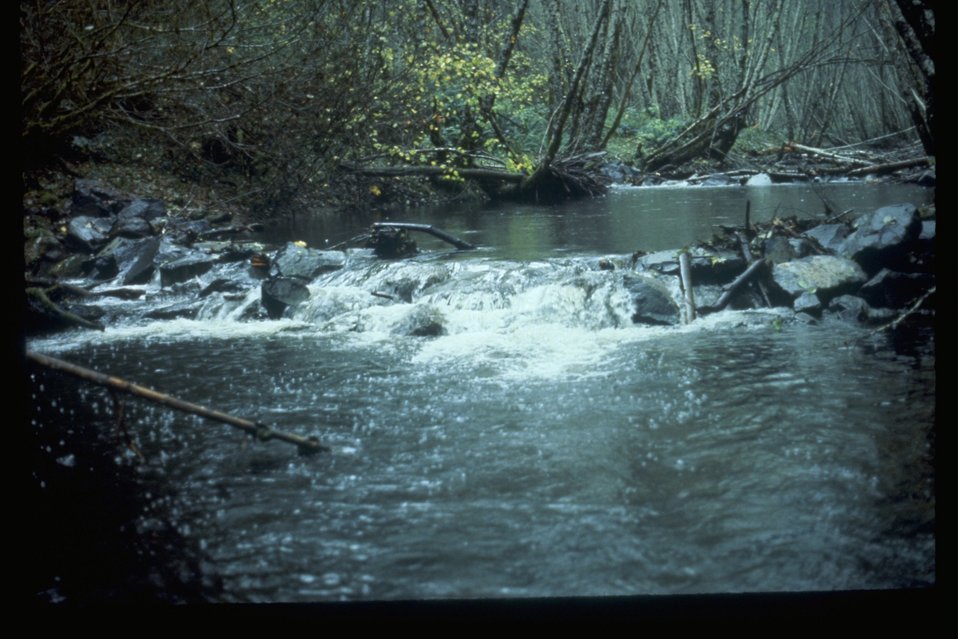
Rock weir in a stream.